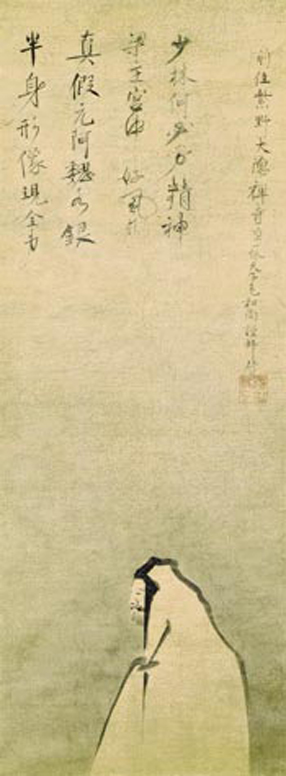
'Portrait of Daruma' attributed to Soga Dasoku